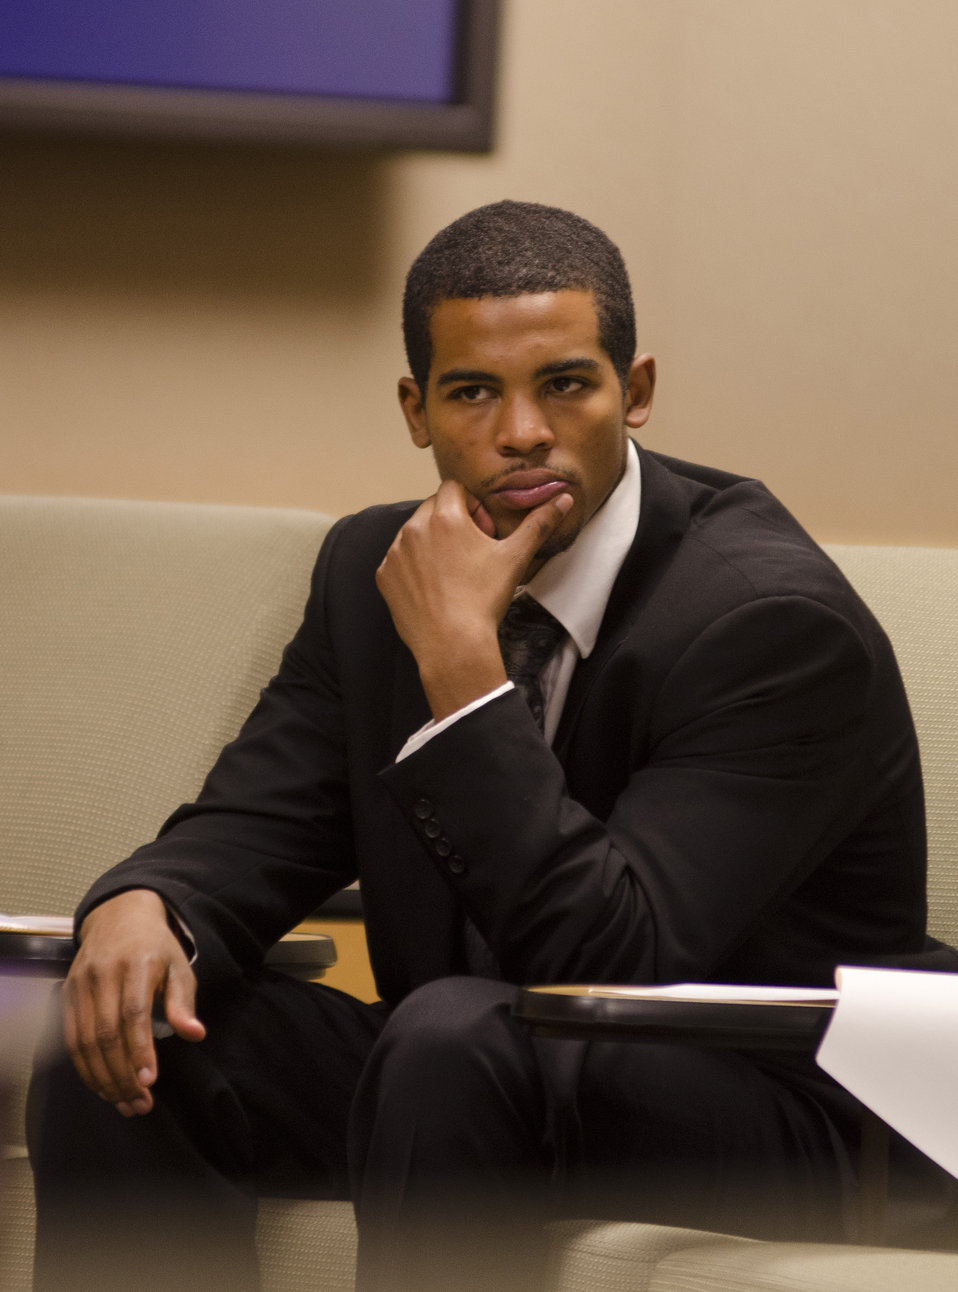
U.S. Department of Agriculture (USDA) Office of the Chief Financial Officer (OCFO) intern Andre Davis ponders a question presented at the USDA Internship Program Listening Session held in USDA’s South Building in Washington, D.C. on Monday, August 7, 2012. The purpose of the USDA Internship Program Listening Session is to provide interns with a forum to express their views about their experiences as a USDA intern. These young people will be among the most promising future USDA leaders and participate in an individual discussion and group session that will develop leadership skills.